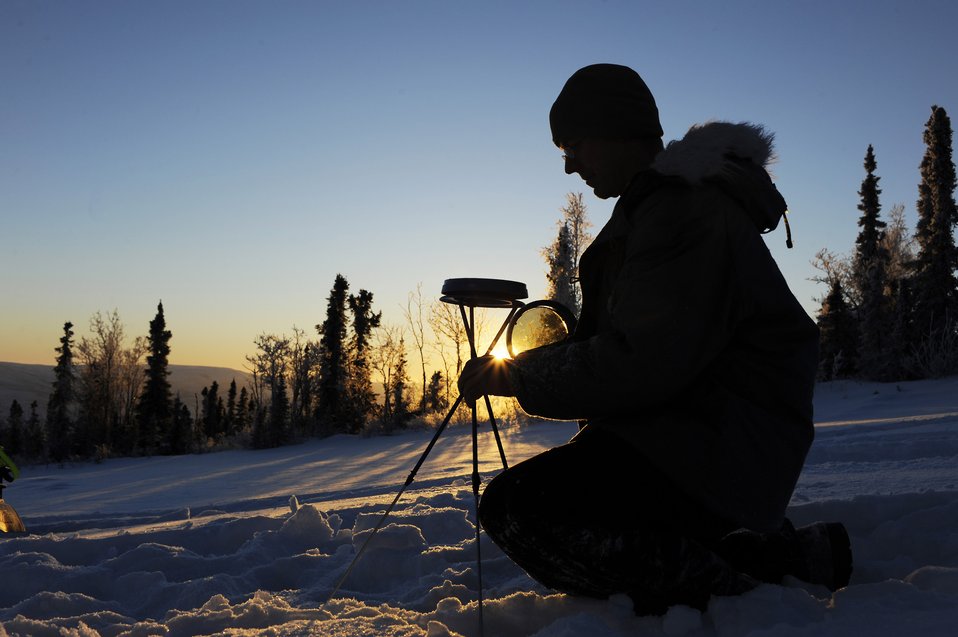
Working in the land of the midnight sun

Staff Sgt. Stewart Raring adjusts a solar pathfinder Dec. 16 at a remote operating facility in the interior of Alaska to obtain solar data to determine the best location and angle to setup solar panels. Sergeant Warring is assigned to Det. 460 at Eielson Air Force Base, Alaska.